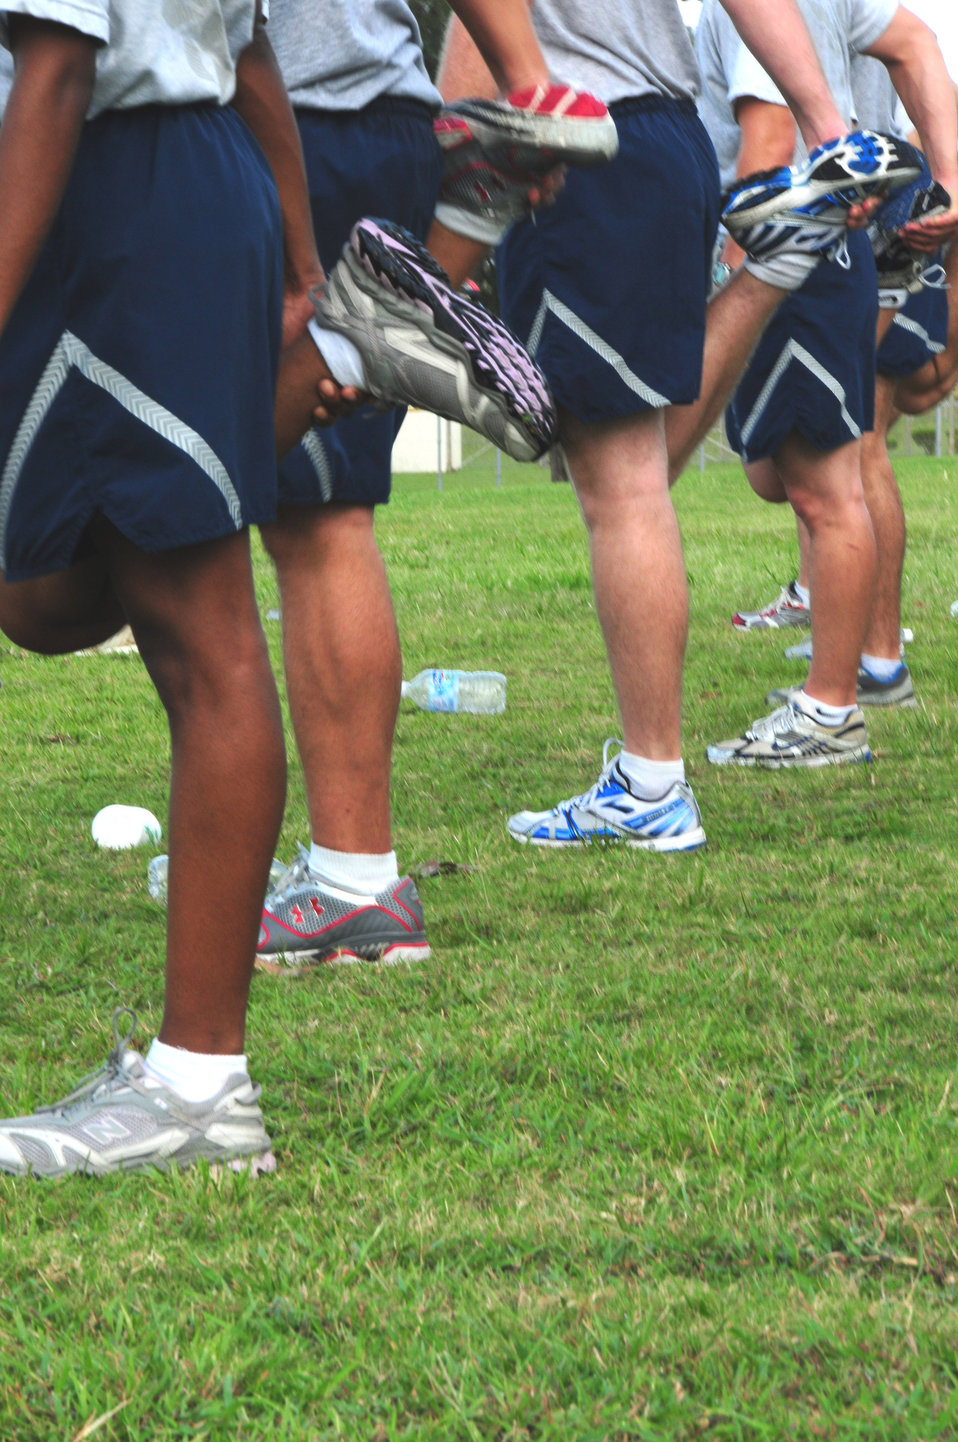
Bringing it back to basics

Members of the vehicle maintenance flight of the 18th Logistics Readiness Squadron stretch their quads as part of their routine cool down after a 5K run Sept. 16, 2009, at Kadena Air Base, Japan. The original PT program was established in 2002 and was modified in 2006 to stay current with the changing Air Force fitness standards.